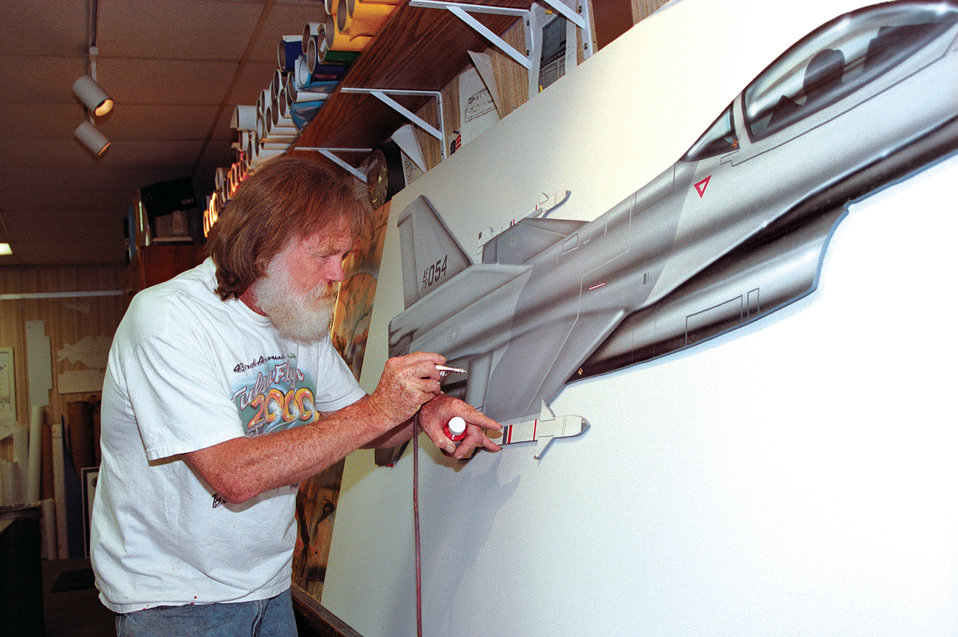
Artist at work

TINKER AIR FORCE BASE, Okla. -- R.T. Foster airbrushes an illustration of an F-16 Fighting Falcon. Three paintings by the longtime illustrator here are on permanent display at the Oklahoma state capital, and his work also hangs in galleries from the Smithsonian Air and Space Museum to the San Diego Air and Space Museum.